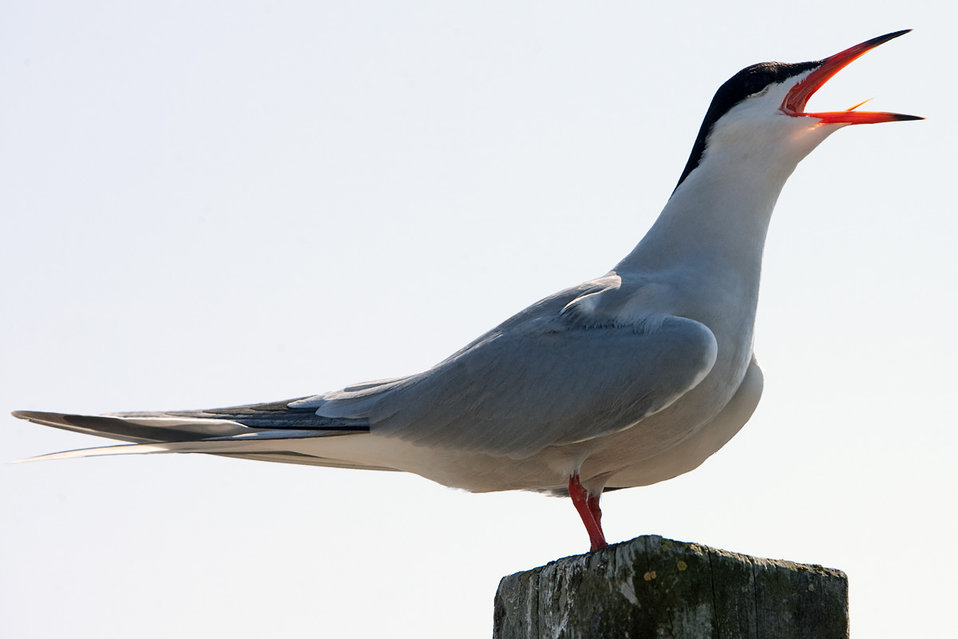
Common Tern

Petit Manan Island, Maine Coastal Islands NWR. Summer with the Seabirds blog: mainecoastalislands.wordpress.com/2010/08/01/terns/